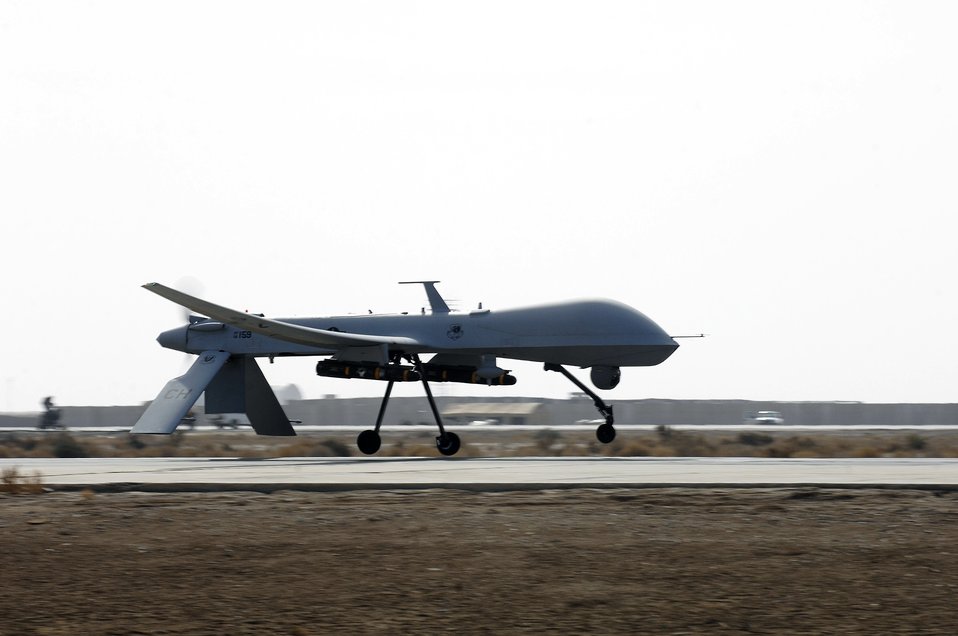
Airpower summary for Jan. 2, 2008

An Air Force MQ-1B Predator from the 361st Expeditionary Reconnaissance Squadron takes off from Ali Base, Iraq, in support of Operation Iraqi Freedom. The Predator is a medium-altitude, long-endurance, remotely piloted aircraft capable of conducting armed reconnaissance.